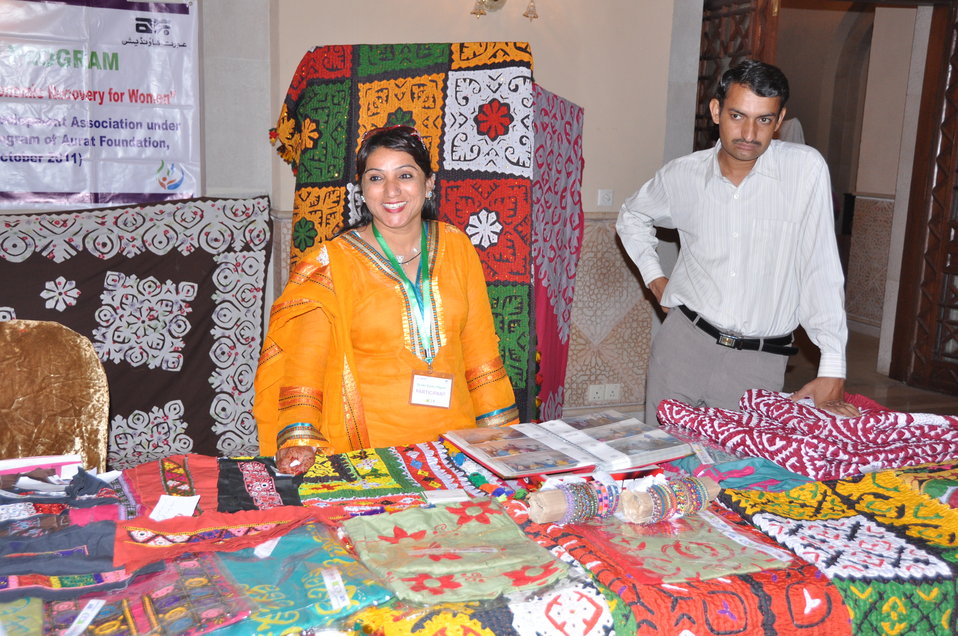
Kianaat Development Organization a Sub-grantee of USAID Funded Gender Equity Program July 30, 2011 Islamabad

GENDER EQUITY PROGRAM